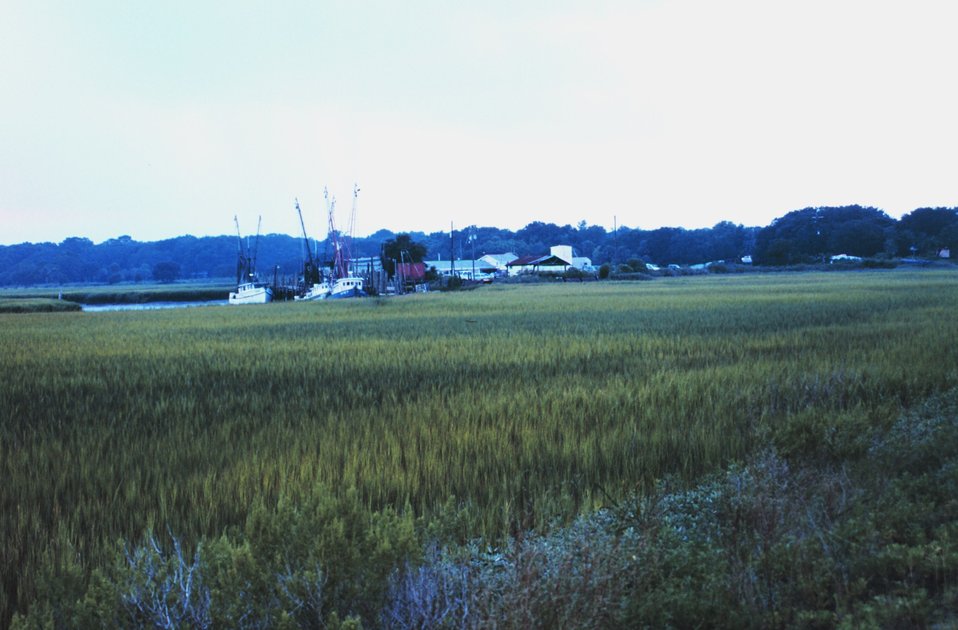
View across marsh of a small fishing village on Route 80